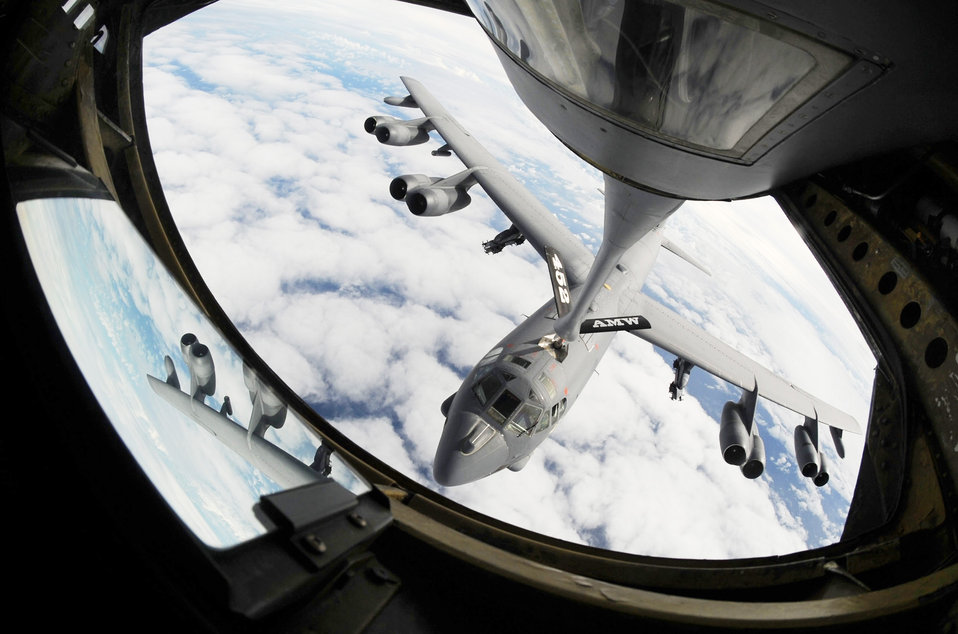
Airmen, KC-135s support exercise in Australia

A KC-135 Stratotanker refuels a B-52 Stratofortress July 13 over the Pacific Ocean during Talisman Saber 09, a U.S. Pacific Command-directed, bilateral command post and field-training exercise designed to maintain a high level of interoperability between U.S. and Australian forces..